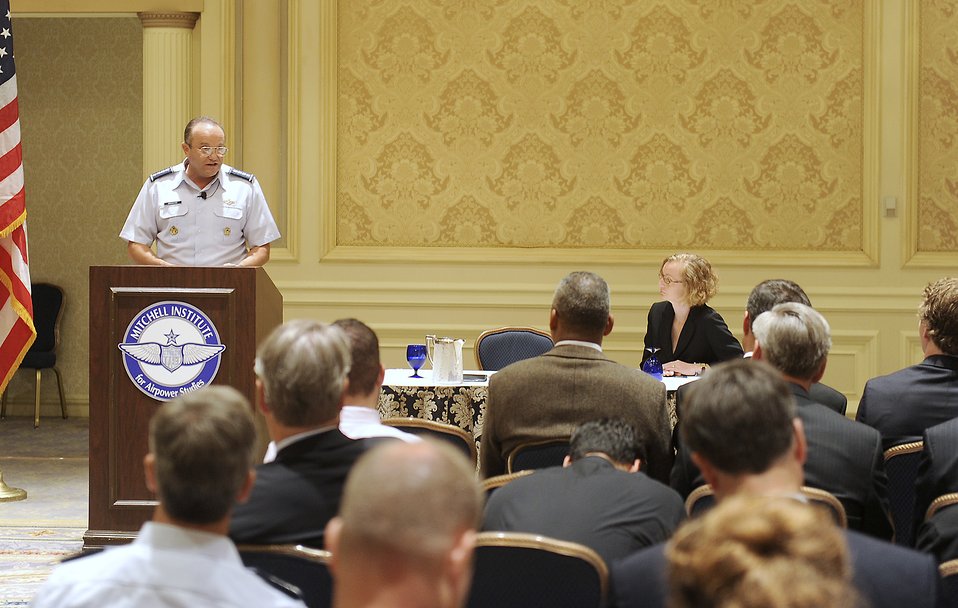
Air Force, Navy team up for 21st Century fight

Air Force Vice Chief of Staff Gen. Phil Breedlove gives a presentation on Air Force future operating concepts and Air-Sea Battle July 20, 2011, in Arlington, Va., at an event hosted by the Air Force Association's Mitchell Institute for Airpower Studies. The general also discussed the importance of the Air Force’s planned Long Range Strike family of systems.